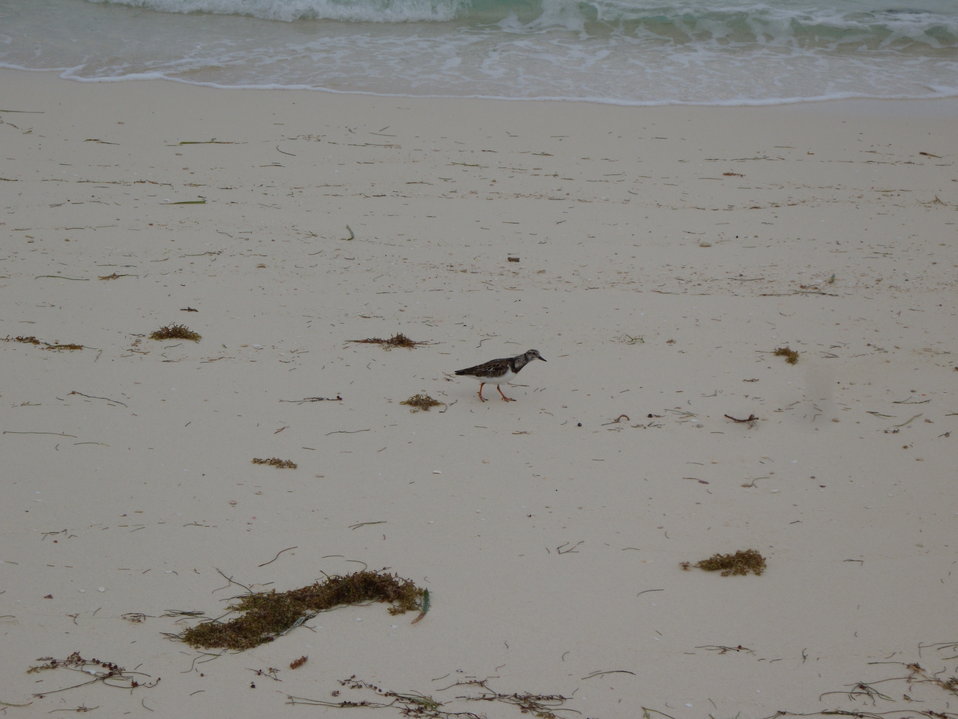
Ruddy turnstone on Berry Islands. (one of the most commonly seen shorebirds)